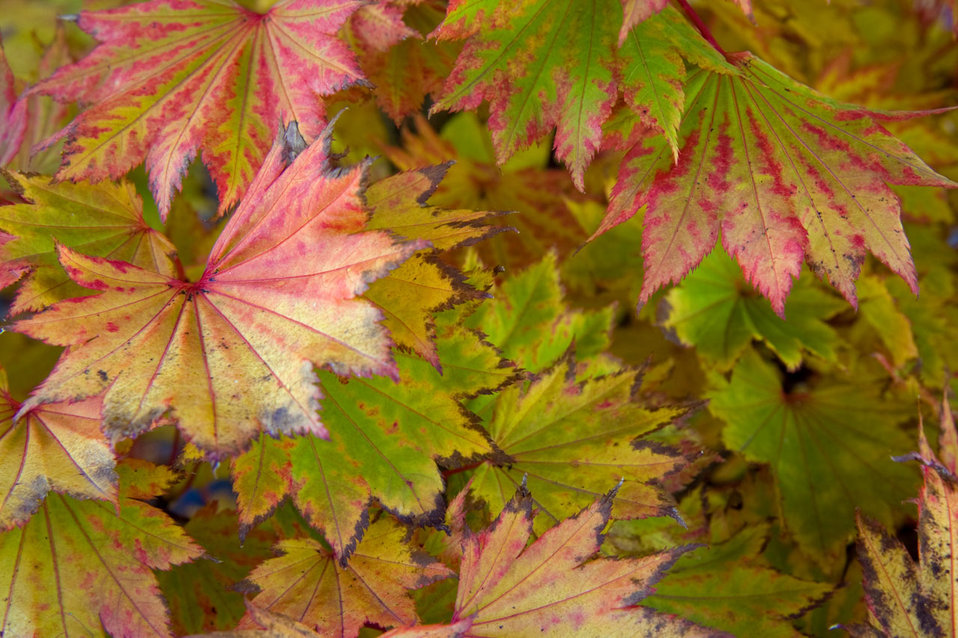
Autumn leaves

Colourful autumn leaves.